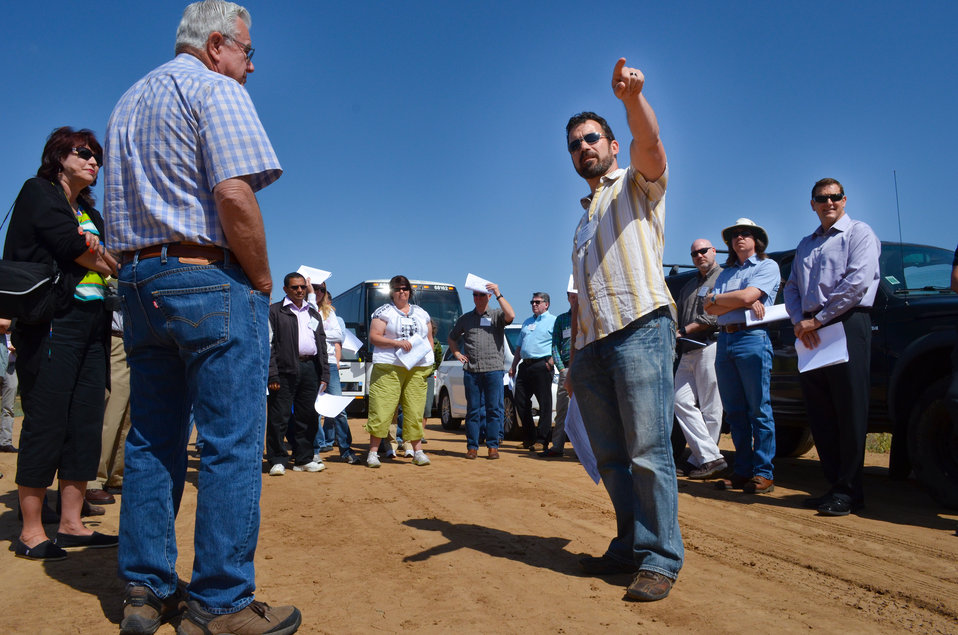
Tom Karvonen, project manager with the U.S. Army Corps of Engineers Sacramento District, points to where the setback levee he is standing on will eventually connect with South River Road in West Sacramento, Calif., during the Water Education Foundation’s Flood Management Tour May 17, 2013. Karvonen manages the Sacramento River Bank Protection Project, a joint effort between the district and the California Central Valley Flood Protection Board to repair riverbank erosion along the Sacramento River and its tributaries.